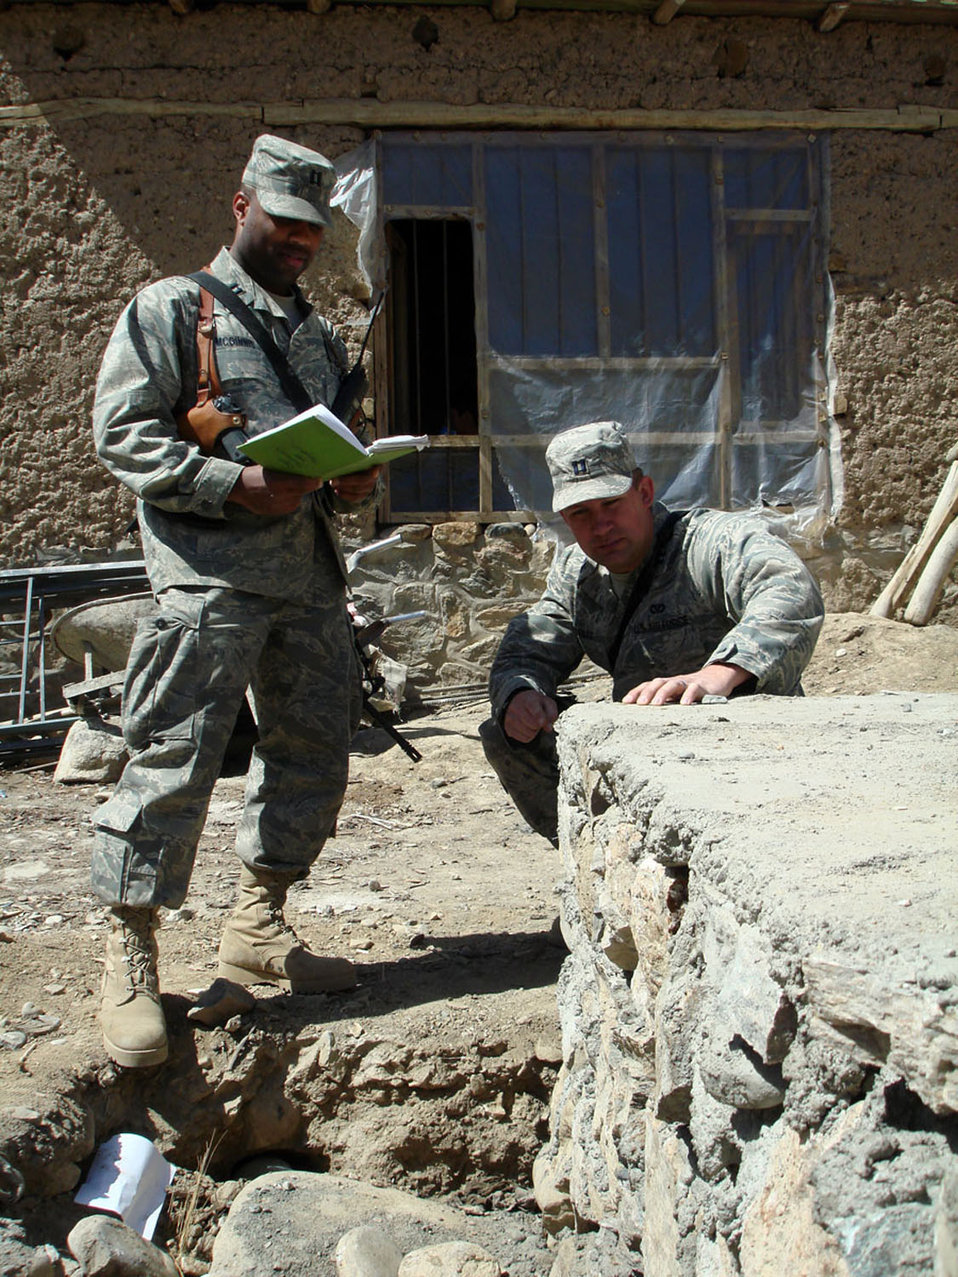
Air Force engineers are outside the wire every day

Capt. Jason Aftanas takes an initial look at a foundation for a schoolbook repository and dictates information to Capt. Kenneth McGinnis at a site near the Khenj District Center April 1 in Afghanistan. The captains are Panjshir Provincial Reconstruction Team engineers.